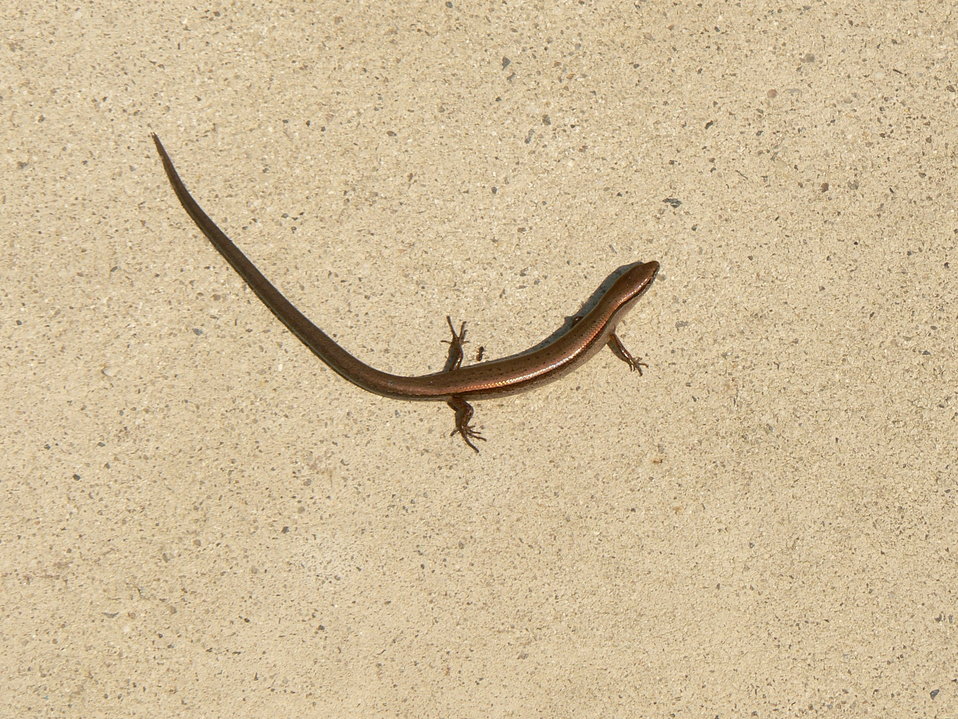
Ground skink at Cape May National Wildlife Refuge.